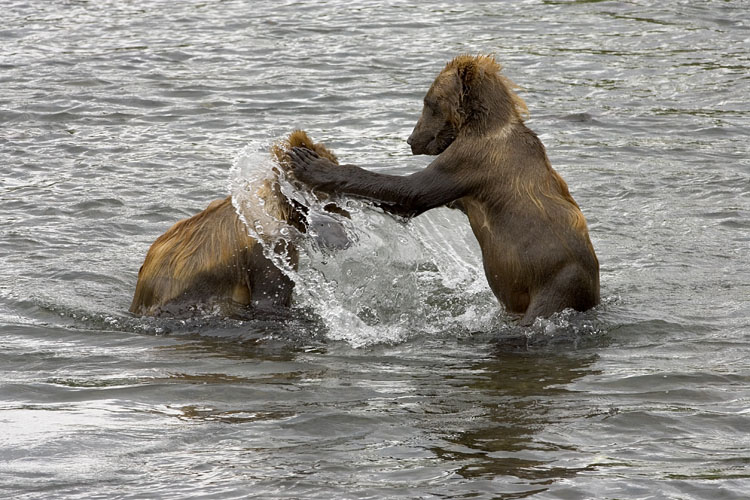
KOD Hildebrand (27)

Kodiak National Wildlife Refuge- Wildlife